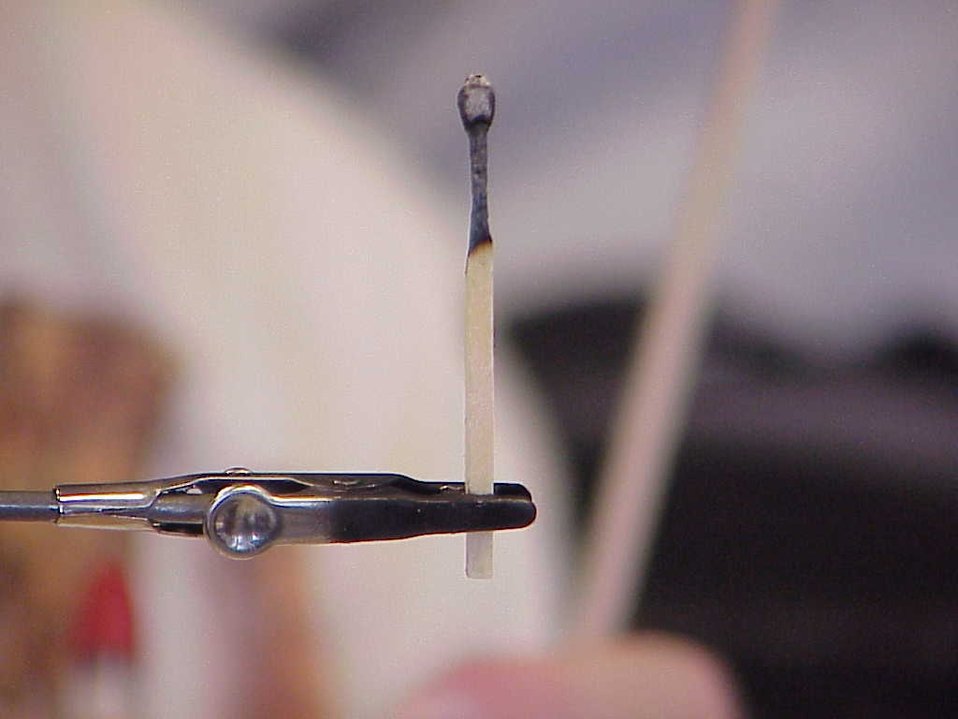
Environmental Education Fire Workshop Timberline High School Fall 2000